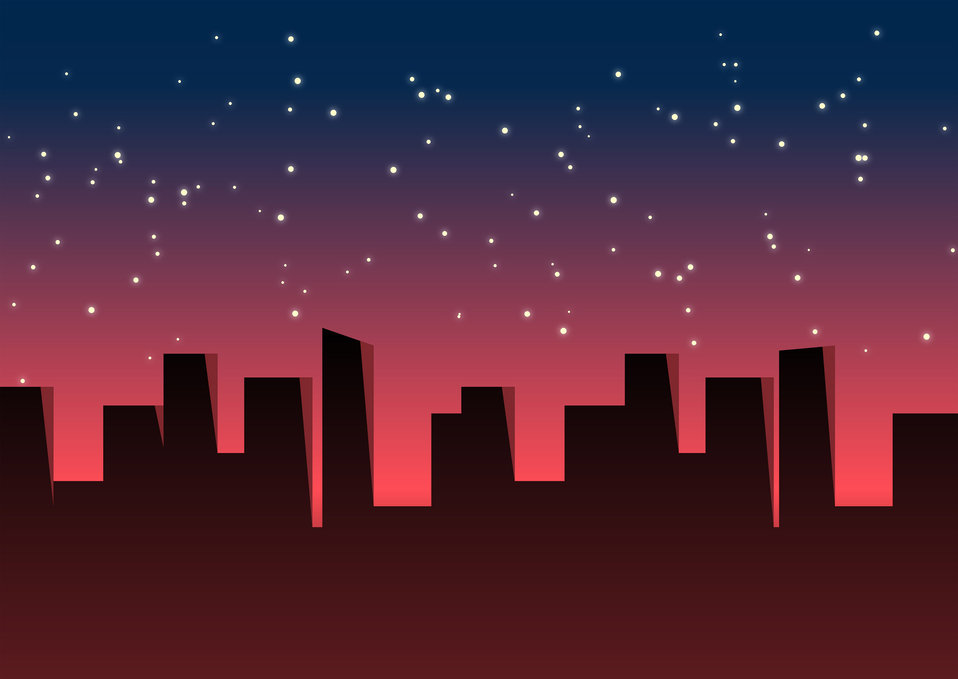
Sunset city

A silhouette view of some city..